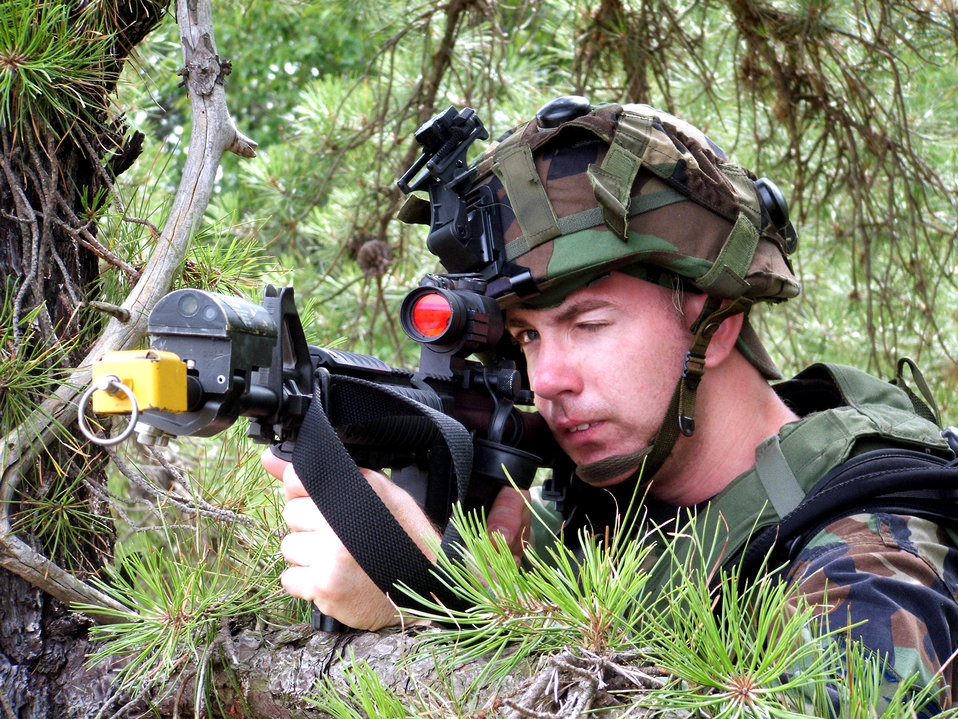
Eagle Flag

Senior Airman Daniel Brown watches over a perimeter area during operations for exercise Eagle Flag 06-3 at Naval Air Engineering Station Lakehurst, N.J., on Saturday, July 15. The exercise is the only flag-level exercise that tests Airmen from multiple Air Force specialties on their expeditionary combat support skills. The exercise is coordinated by the Air Mobility Warfare Center's 421st Combat Training Squadron. Airman Brown is assigned to the 305th Security Forces Squadron at McGuire Air Force Base, N.J.